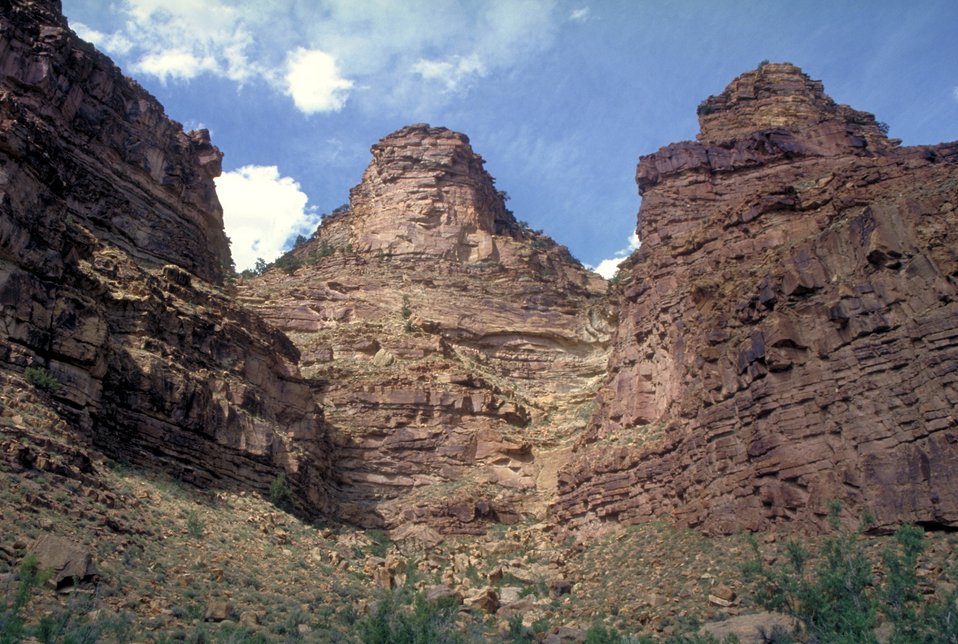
Nine-Mile Canyon near Price, Utah.